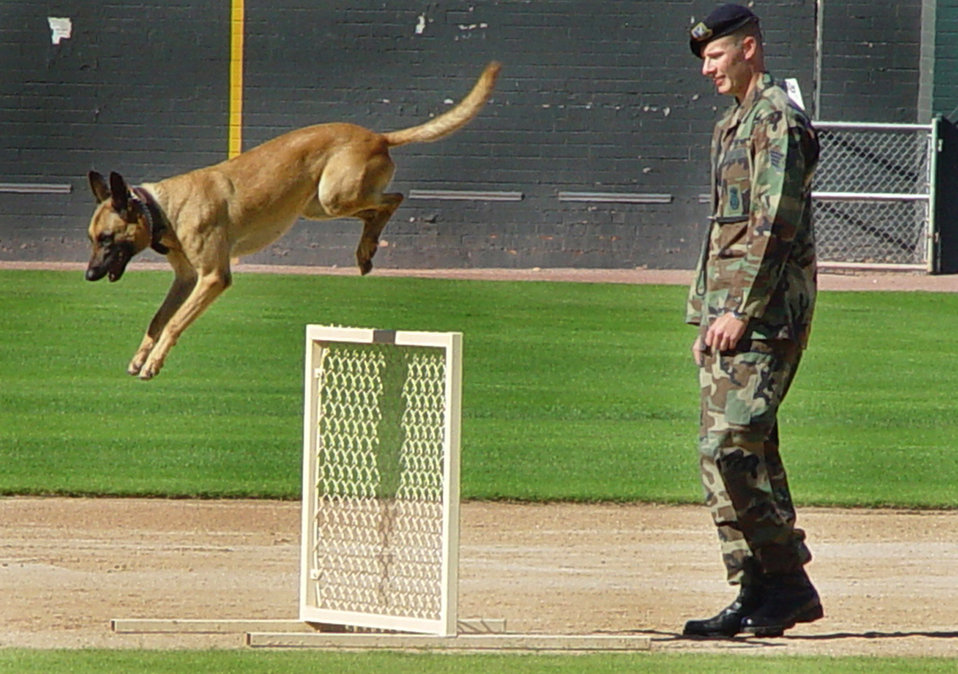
K-9 kangaroo?

TUCSON, Ariz. (AFPN) -- Staff Sgt. Jesse Frank commands his military working dog, Gina, to jump a hurdle in the tactical obedience portion of the Tucson Area Police K-9 Trials. Sergeant Frank and Gina are with the 21st Security Forces Squadron at Petersen Air Force Base, Colo.